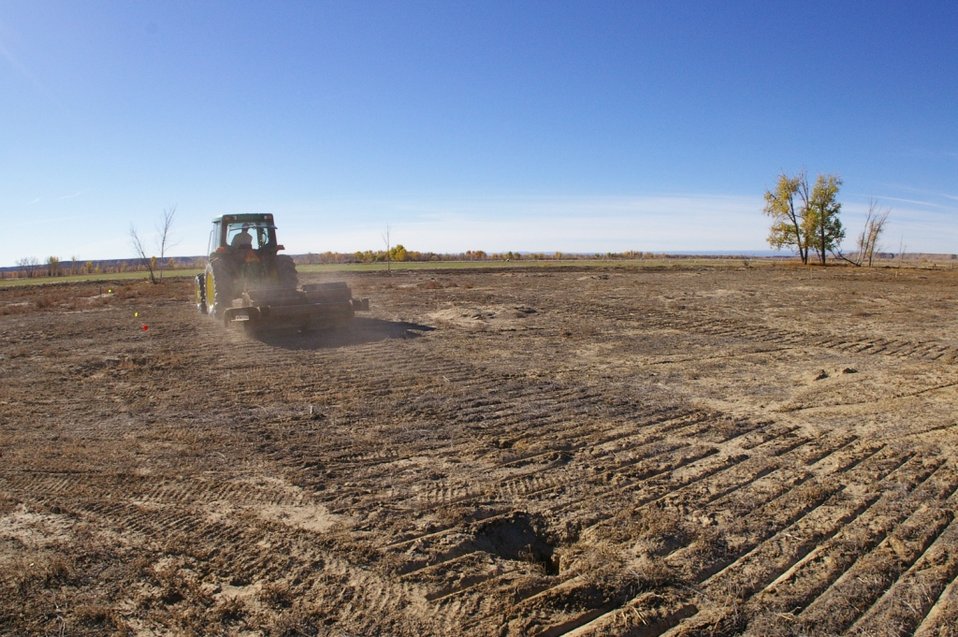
Imprinting

An imprinter is used to create depressions to hold moisture and to create a change in topography thereby creating a different climate for the seed to grow. This is part of a grassland research project at Ouray National Wildlife Refuge.